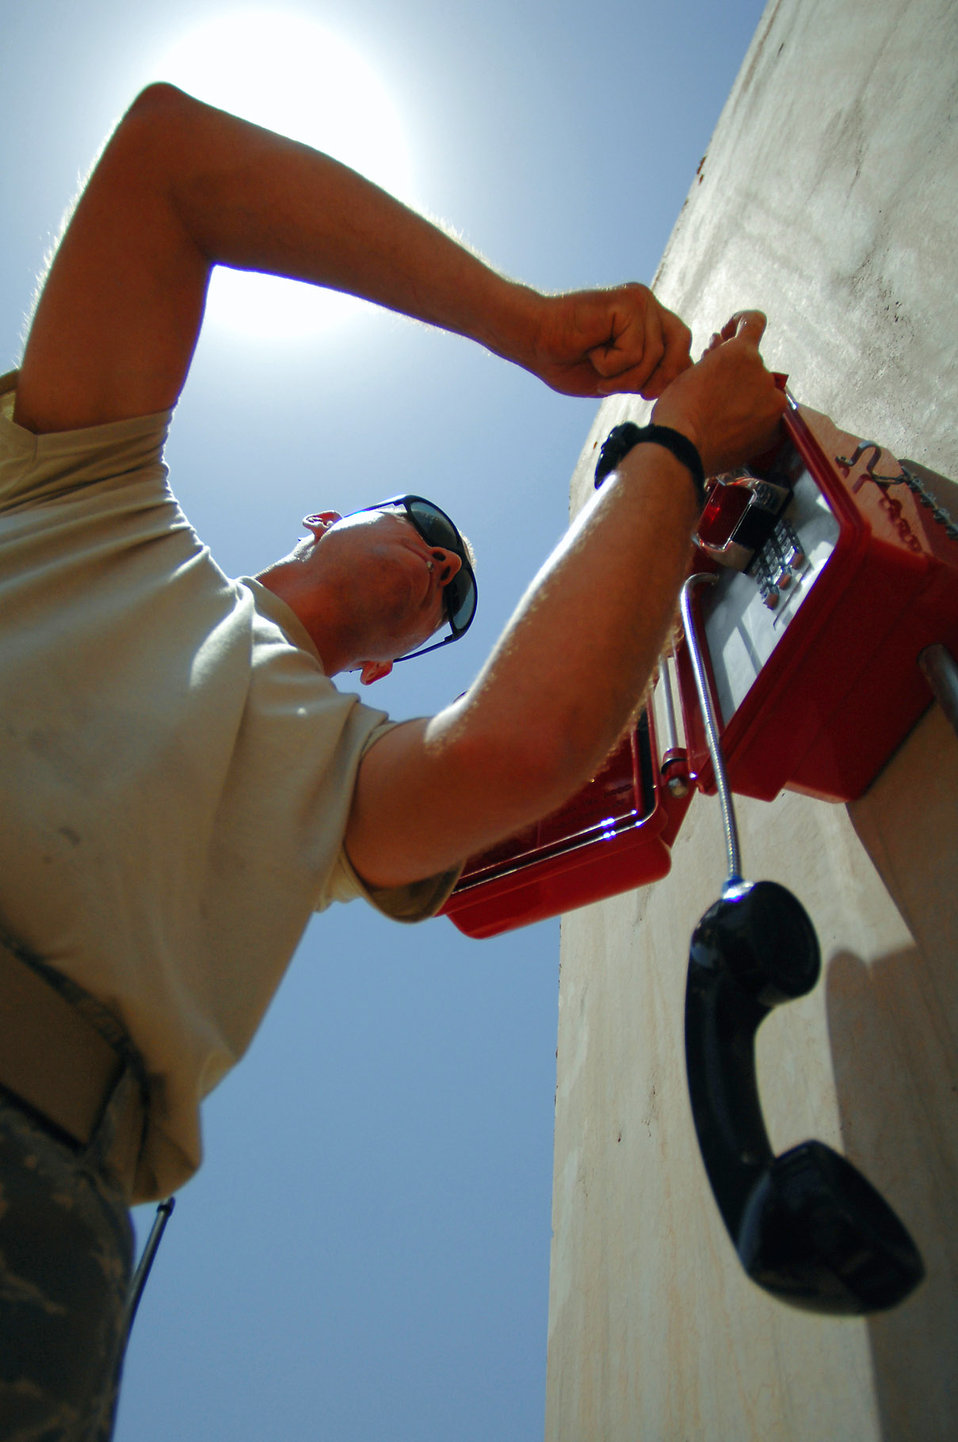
Emergency life line

Staff Sgt. Phillip Balson mounts a new weather-resistant emergency phone on a T-barrier in the Air Force housing area June 13 at Balad Air Base, Iraq. More than 120 lines were installed throughout the housing area so servicemembers can give notice during accountability checks. Sergeant Balson is a 332nd Expeditionary Communications Squadron infrastructure technician deployed from Tinker Air Force Base, Okla.